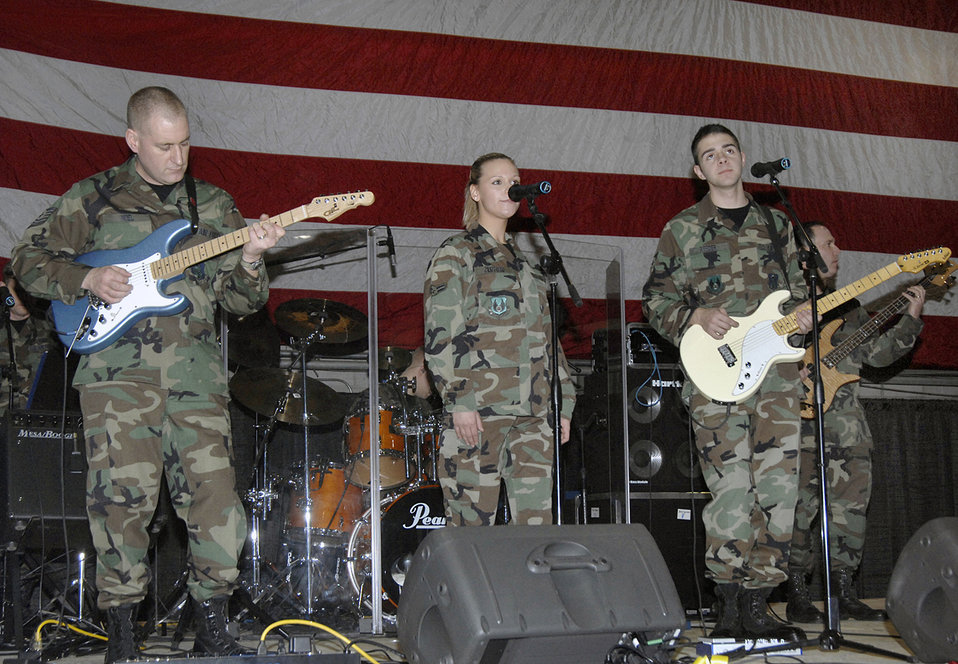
Welcome Home Heroes

The Air Force Band of Liberty rock ensemble, Afterburner, performs at the Heroes' Homecoming at Hanscom Air Force Base, Mass., Jan. 19.